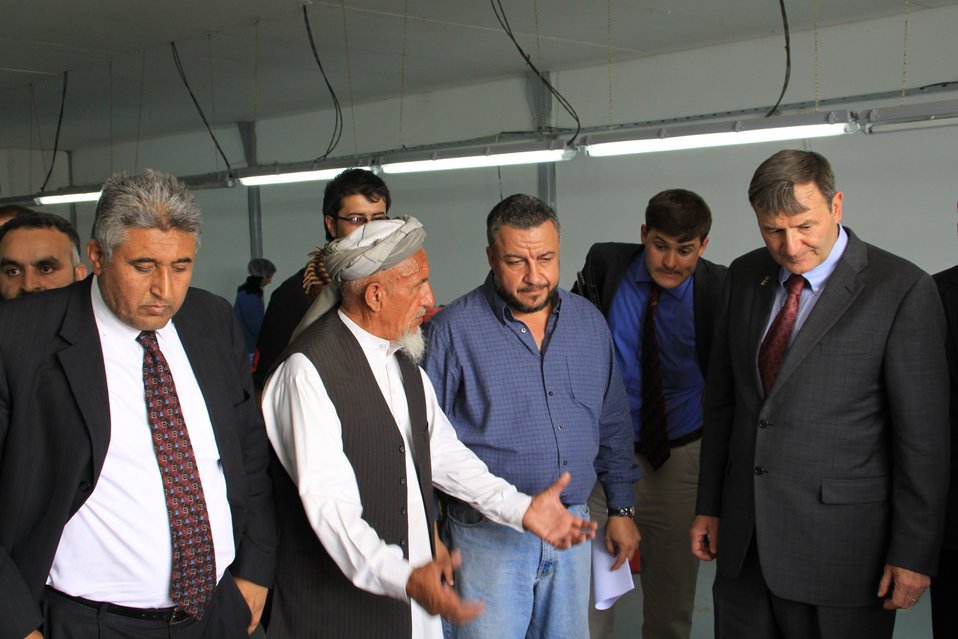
Badam Bagh Farm